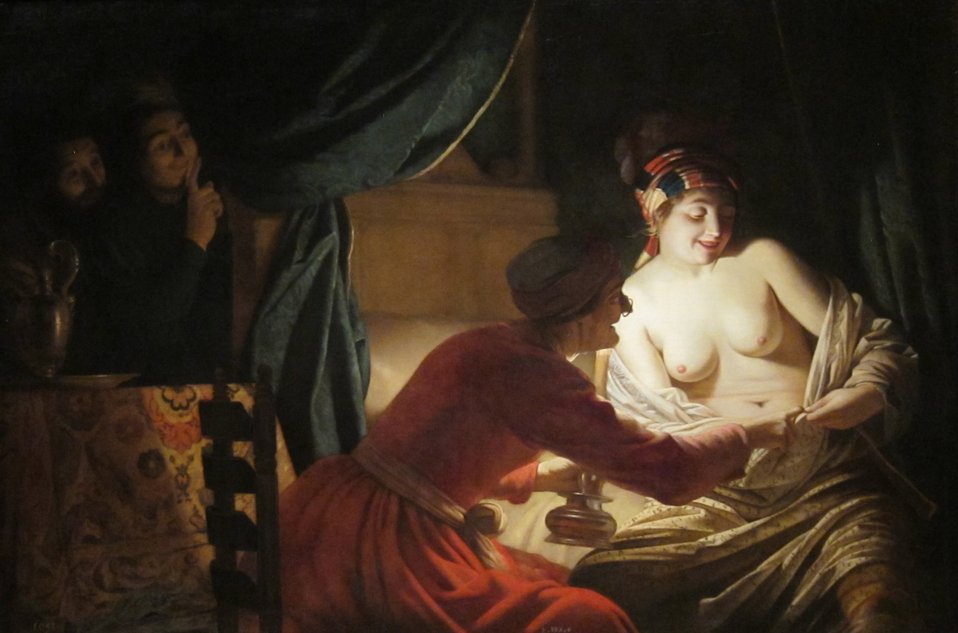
'The Flea Hunt' by Gerrit van Honthorst, Dayton Art Institute